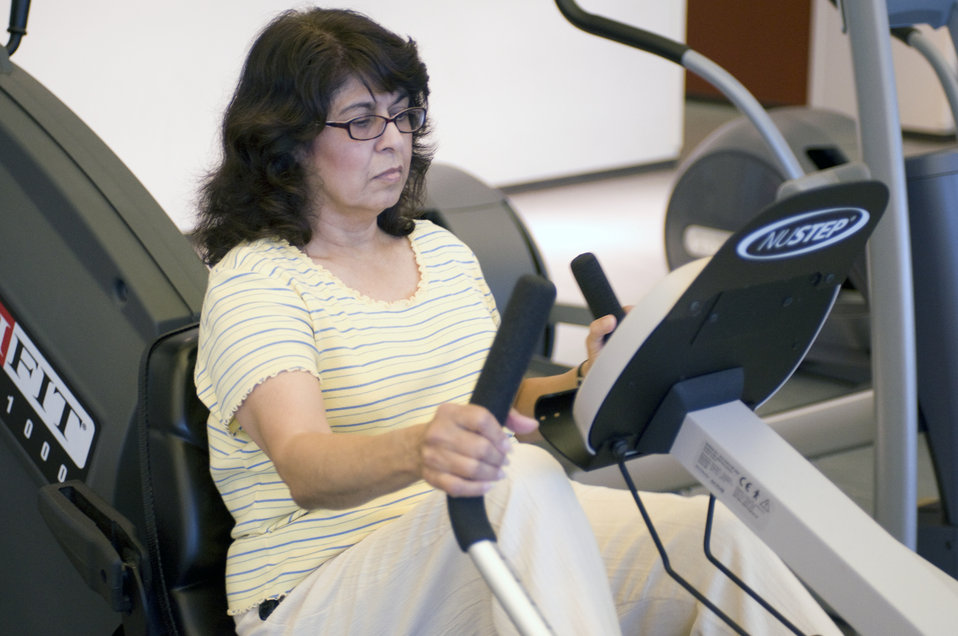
This image was captured on one of the Centers for Disease Control's (CDC) campuses, in the facility's fitness center, where a number of scheduled group classes are provided for employees' health and enjoyment. In this particular view, a female CDC staffer was making use of a NuStep machine, which in a seated position, works both the upper body, and the lower body in a simultaneous aerobic fashion.